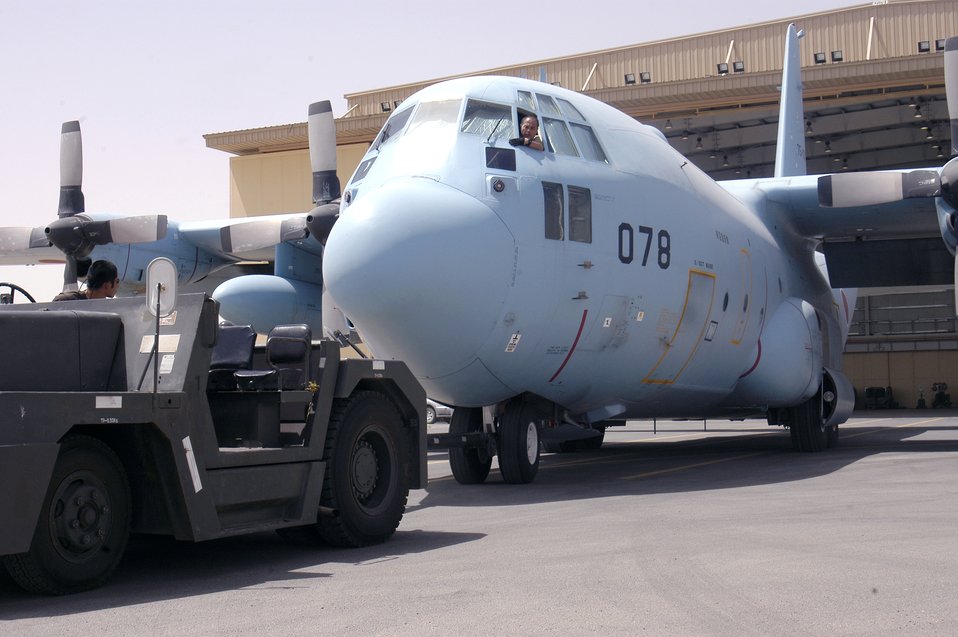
Japanese military key member of coalition

Maintainers from the Japan Air Self-Defense Force's Iraq Reconstruction Support Airlift Wing push one of their C-130s into a hangar at a forward operating base in Southwest Asia.